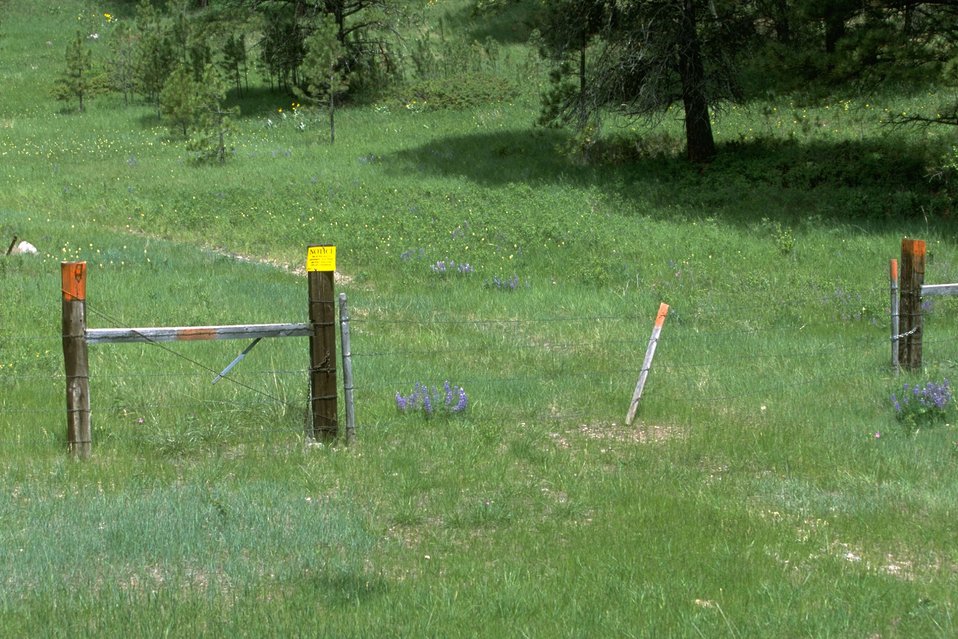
Wildflowers and grass on private property in the Judith Mountains